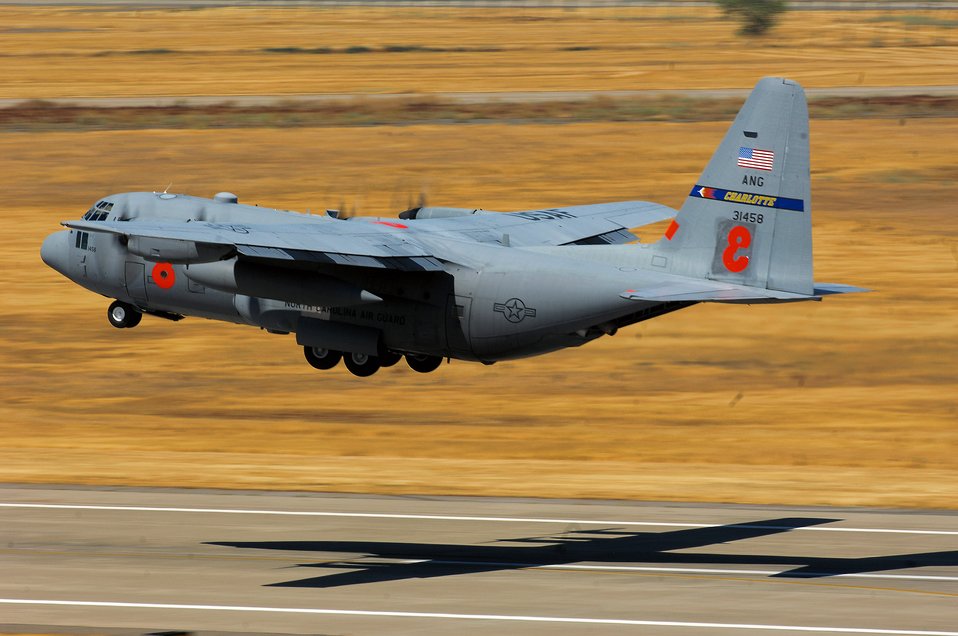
Military aircraft provide surge capability for wildfire response

A C-130 Hercules from the North Carolina Air National Guard's 145th Airlift Wing equipped with the modular airborne firefighting system takes off from McClellan Airfield, Calif., on a firefighting support mission. A continuing heat wave and an ongoing need for aircraft to support ground firefighters will likely keep Department of Defense aircraft very busy for the foreseeable future in support of the national wildland firefighting effort.